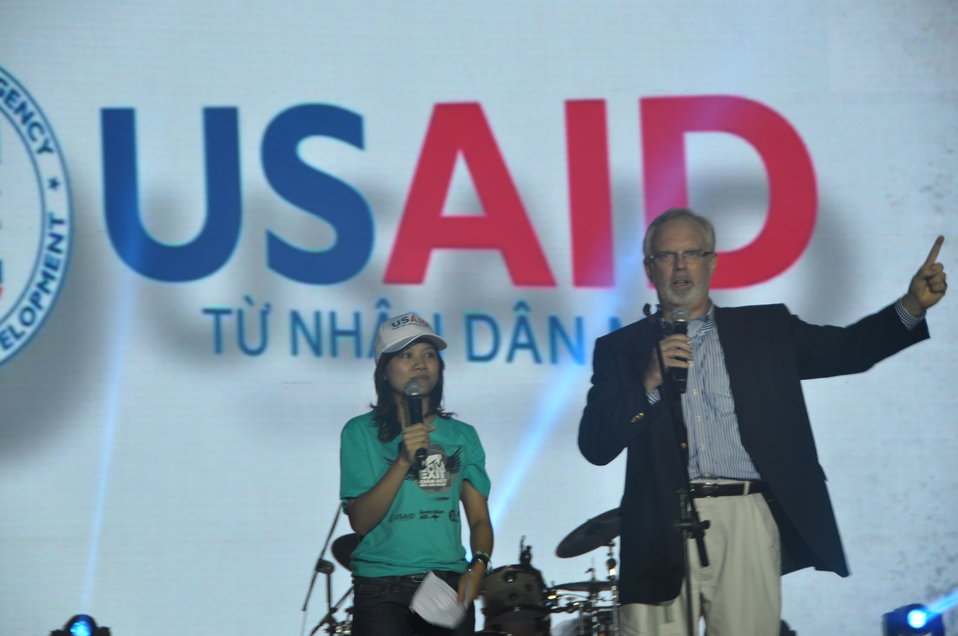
U.S. Ambassador David Shear belts out the message: Stop - human trafficking - NOW.oitation

USAID supports MTV EXIT concert against human trafficking and exploitation